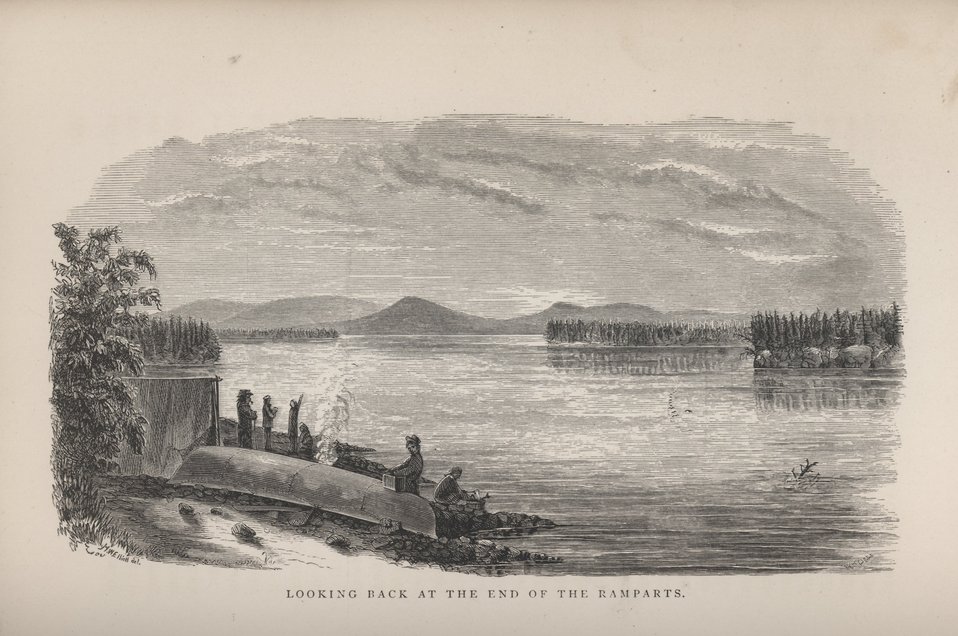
Looking back at the end of the Ramparts on the Yukon River from 'Alaska and Its Resources' by William Healy Dall. 1870. Library Call No. c/ga D144.